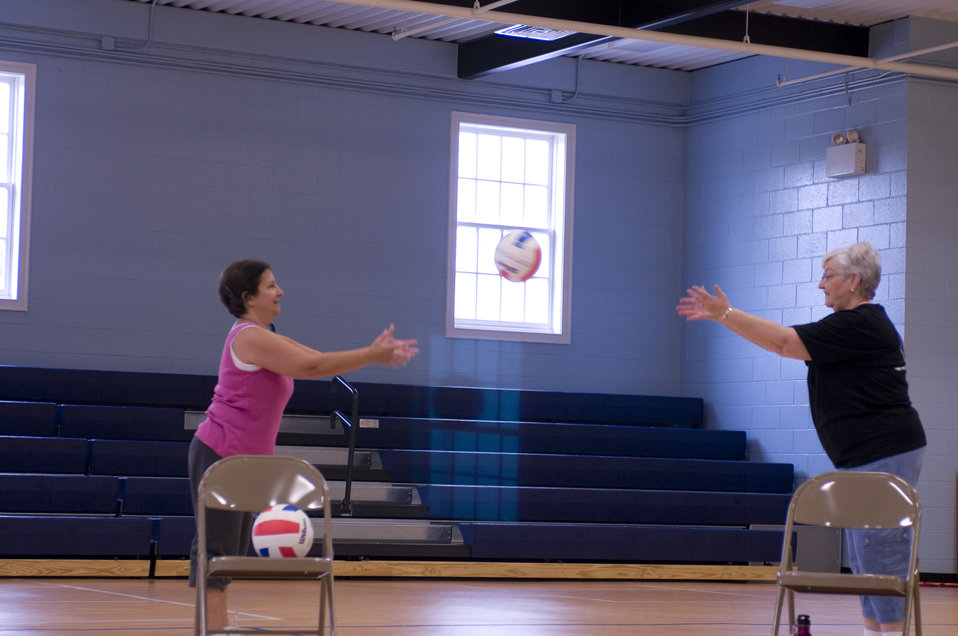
The two older women pictured here on the wooden floor of an indoor basketball court, were participating in an exercise class consisting of stretching, and aerobic repetitive motion movements. At this point in their class, these two participants were tossing an inflatable volleyball to one another, thereby, working the muscles in their shoulders and arms, as well as helping to hone their hand-eye coordination. Exercise stimulates not only one's muscles, but brain activity as well, both of which are important ingredients to creating, and maintaining an improved quality in one's life.